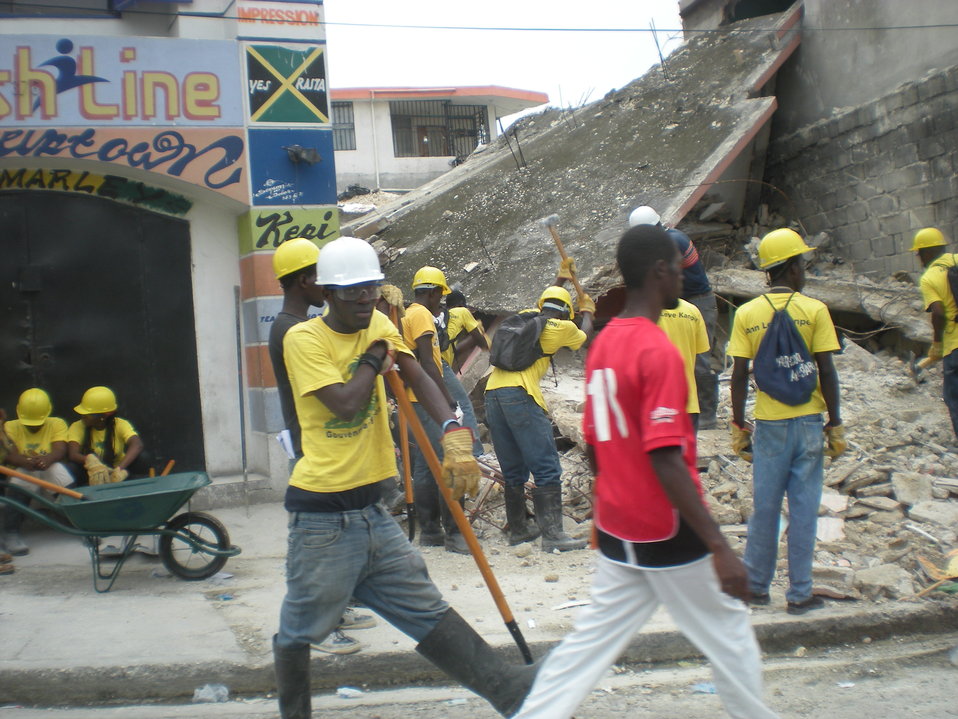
Haiti, One Year Later

Haitians in the “cash for work program,” seen here in yellow shirts, work to remove rubble from damaged buildings.